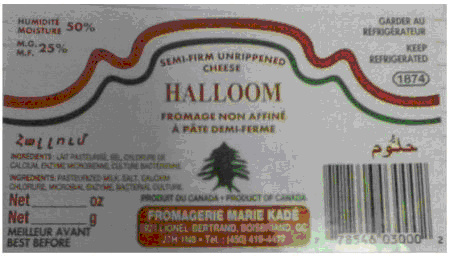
RECALLED - Cheese

December 29, 2011 - Consumer Alert for cheese and milk products due to Listeria monocytogenes contamination.